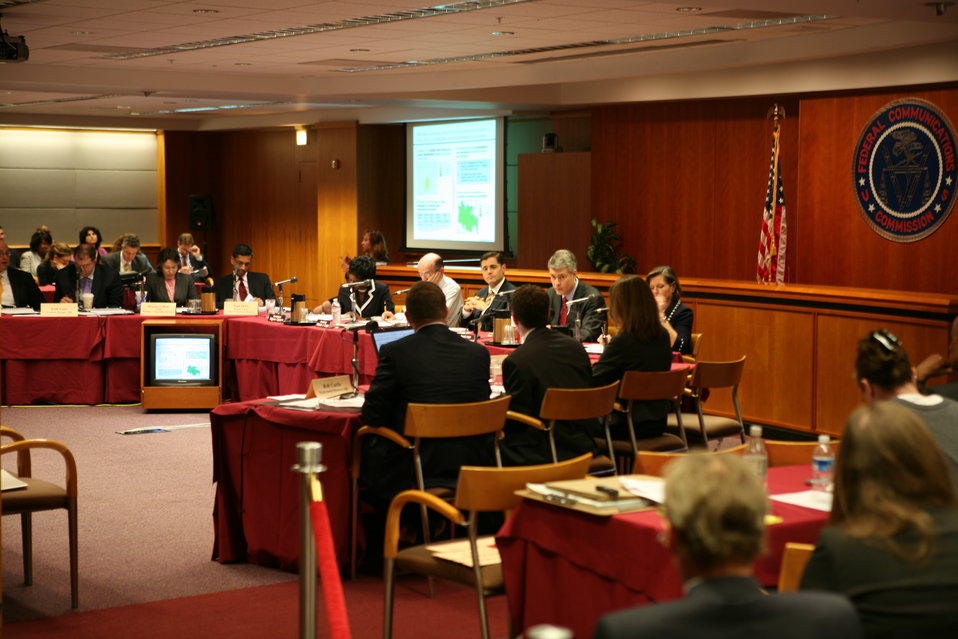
Midterm Review4

Broadband Midterm Review, 9-29-09